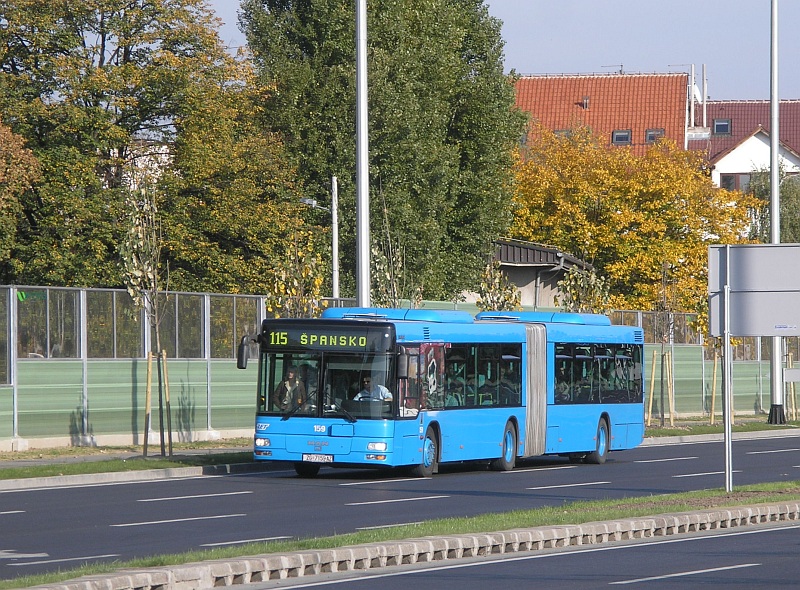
Zagreb bus on line 115